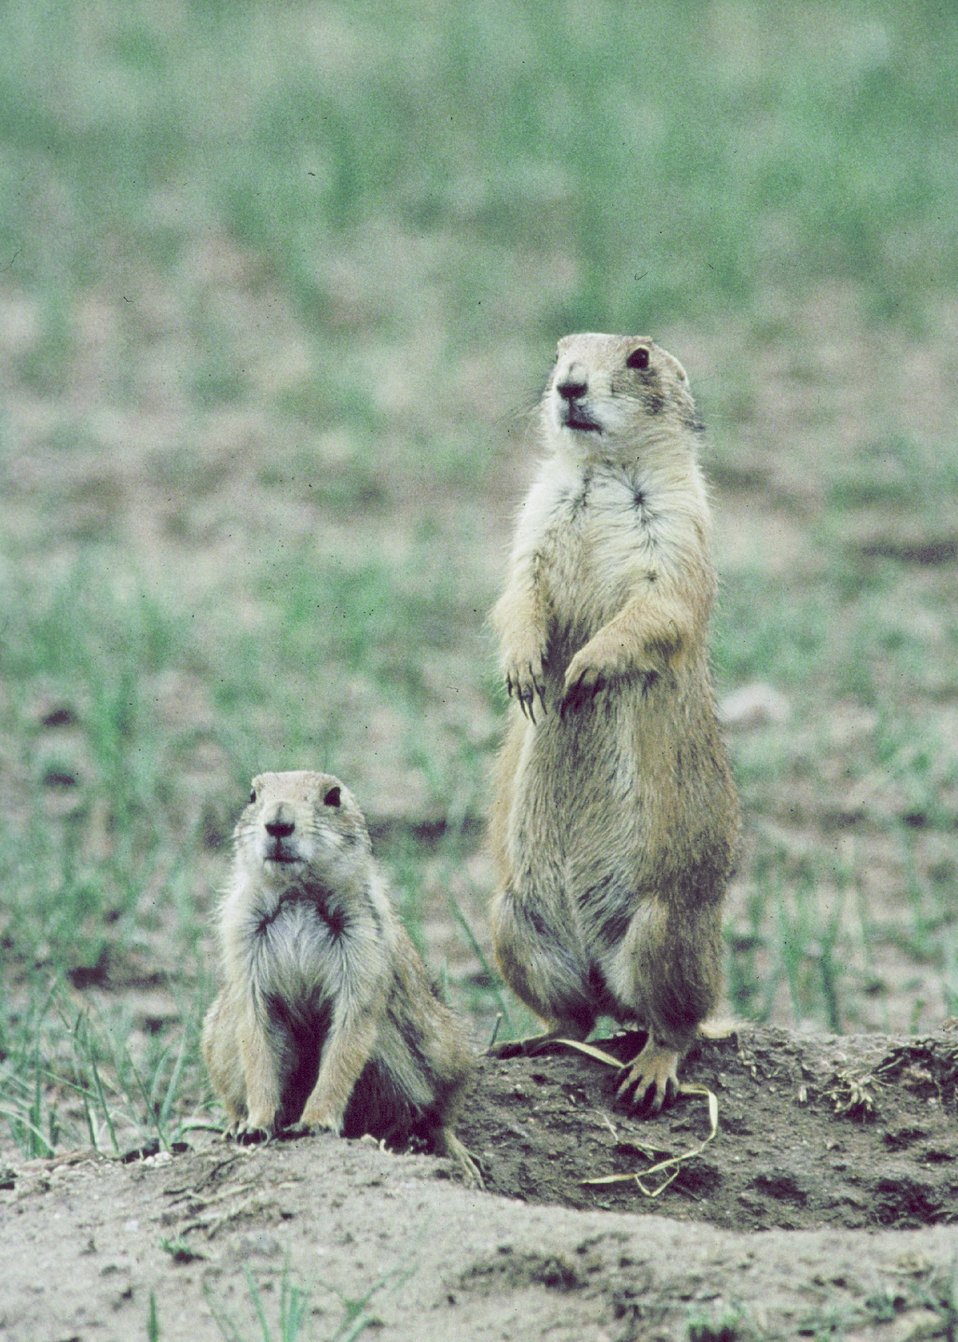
Two Wyoming Prairie Dogs.